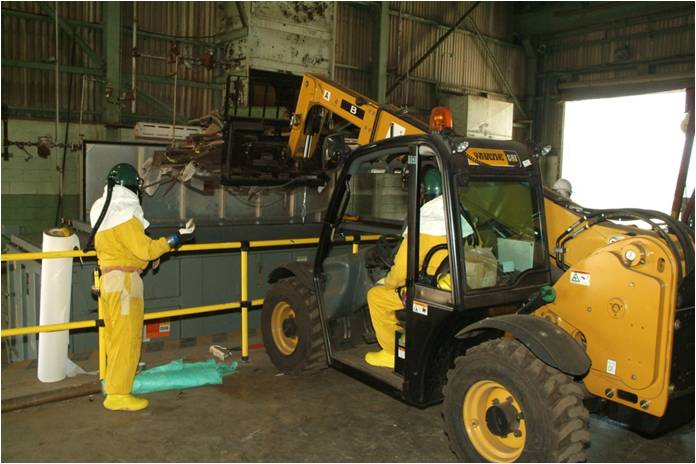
Paducah Feed Plant Demolition

A spotter, left, helps a forklift driver safely drop debris into a roll-off bin in the Feed Plant.